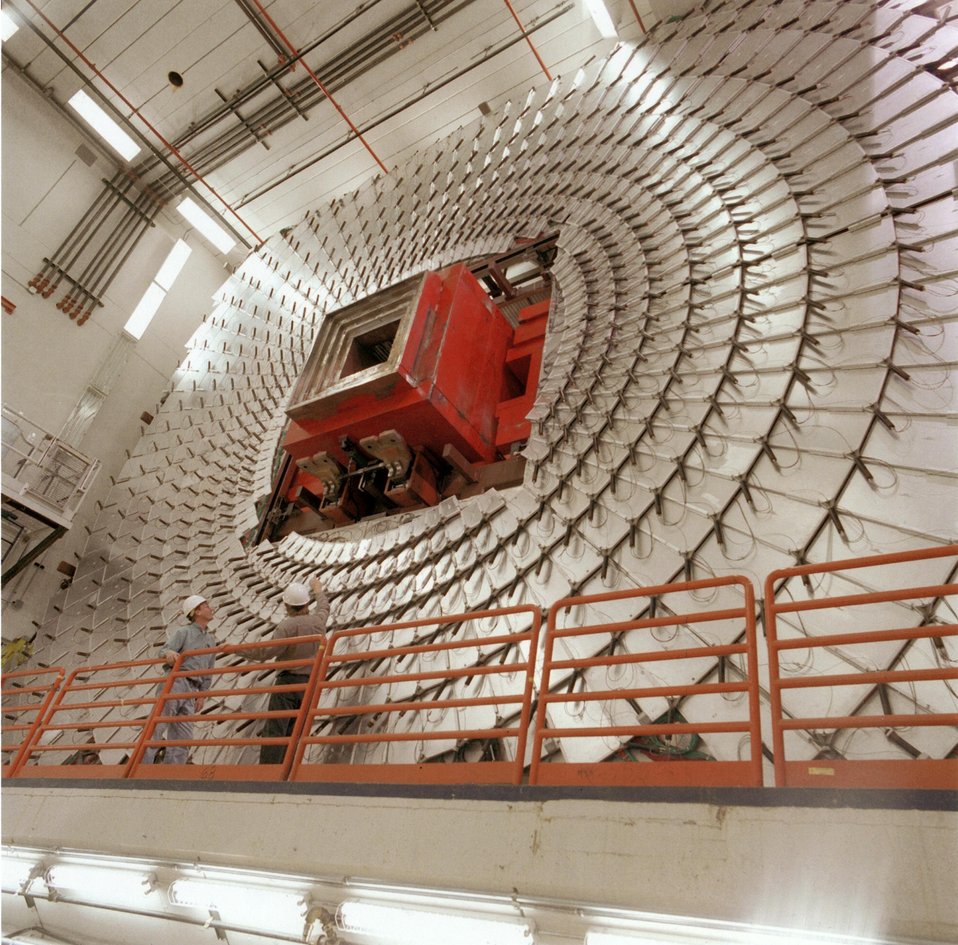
THE C-LAYER MUON TRUSS, PART OF THE DZERO DETECTOR, INSTALLED IN THE ASSEMBLY HALL.

FERMI'S TWO DETECTORS, THE COLLIDER DETECTOR FACILITY (CDF) AND D-ZERO ARE ABOUT FOUR STORIES HIGH, WEIGHING ABOUT 5000 TONS EACH. THE PARTICLE COLLISIONS OCCUR RIGHT IN THE MIDDLE OF THE DETECTORS, WHICH ARE CRAMMED WITH ELECTRONIC INSTRUMENTATION.